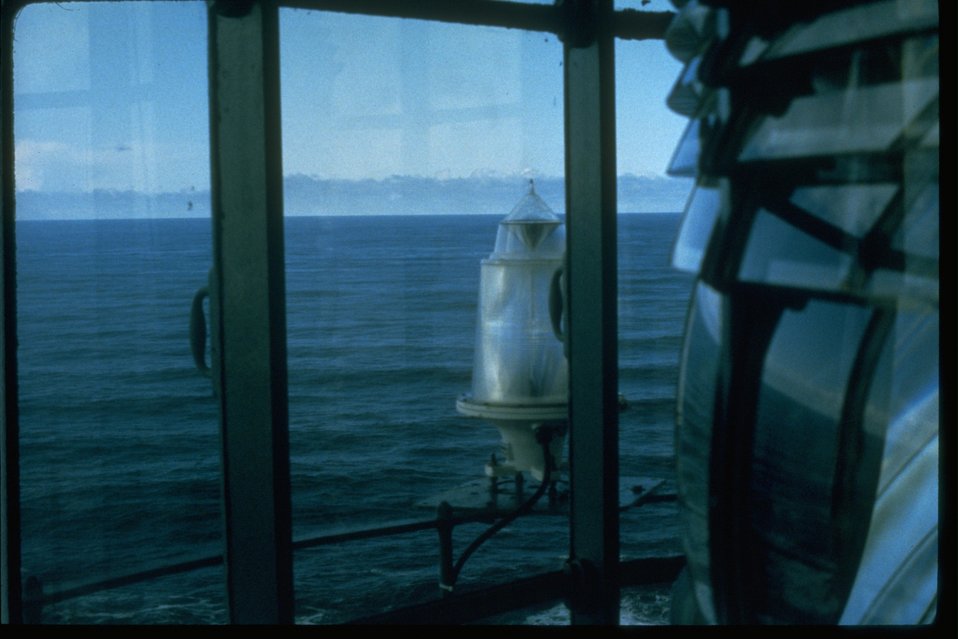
The back-up strobe in the lantern room of the Yaquina Head lighthouse.